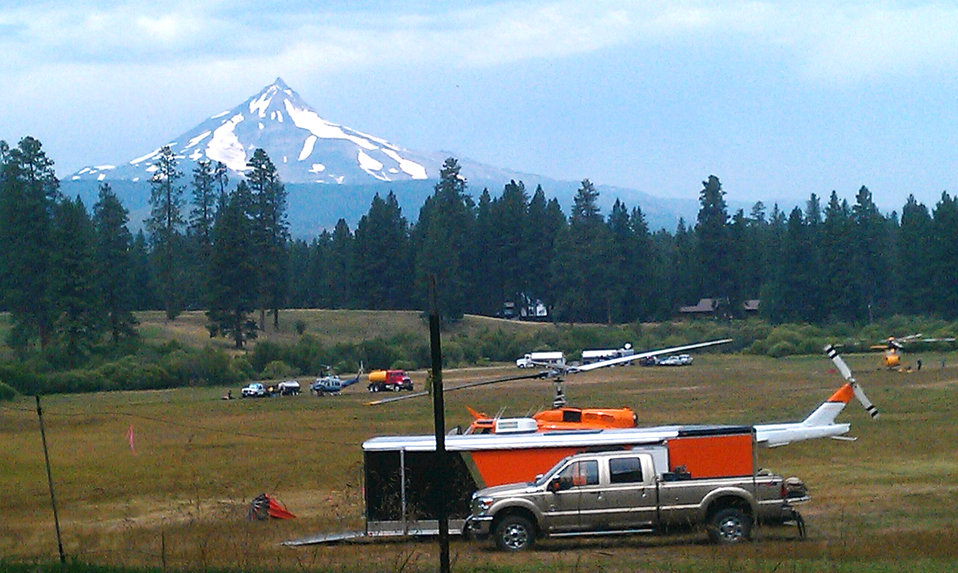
Helicopters stand ready at the helibase for use against the Green Ridge Fire. The Green Ridge Fire in the Deschutes National Forest near Sisters, OR began on Jul. 31, 2013 by lightning has consumed approximately 1,510 acres and is approximately 95% contained.